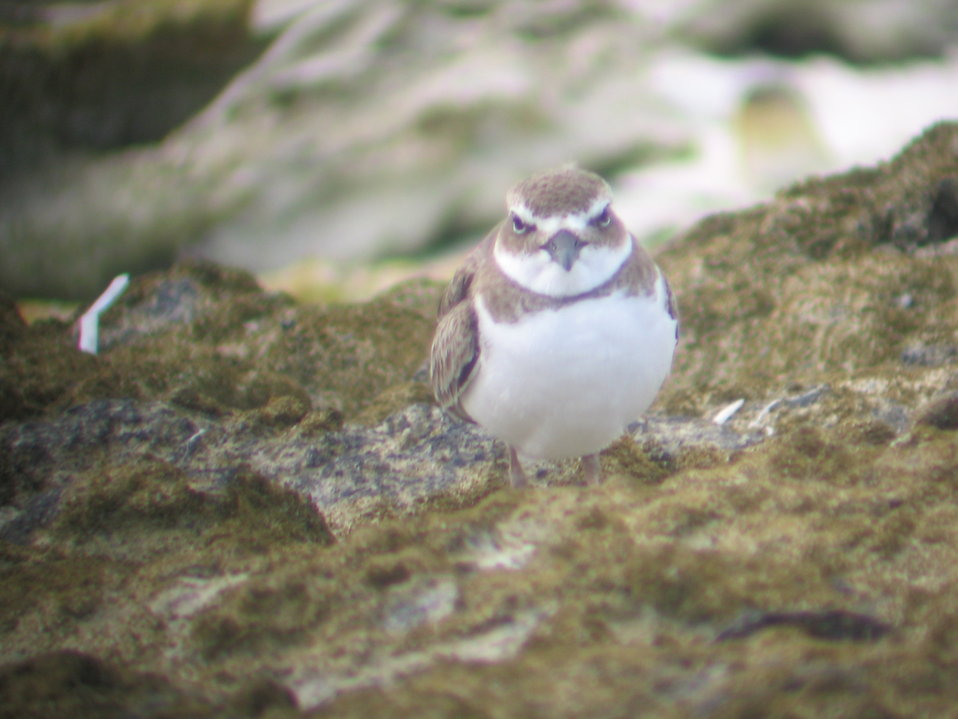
Wilson’s plover through spotting scope

Photo taken at Berry Islands.